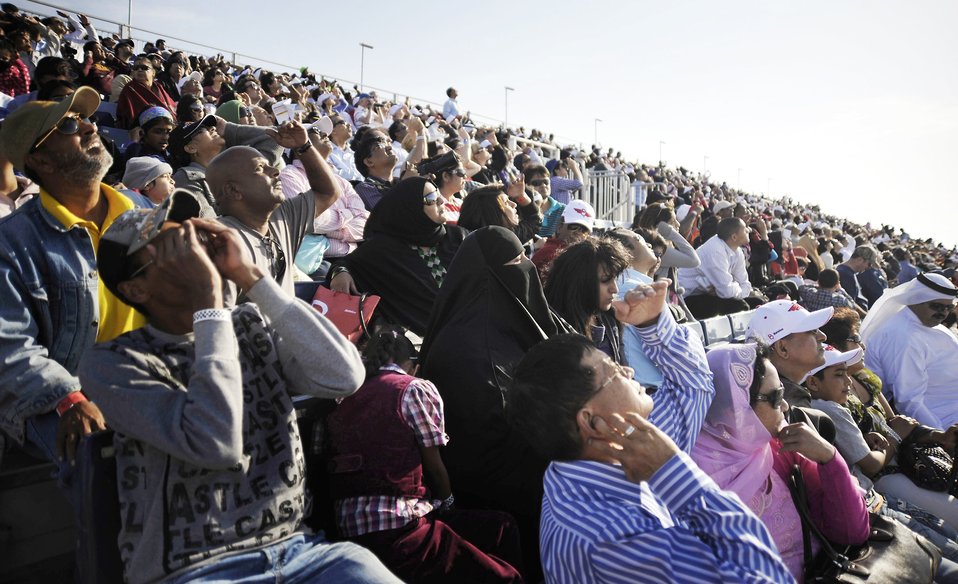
Airmen, Sailors demonstrate airpower at Bahrain International Airshow

Airshow spectators watch as a Navy F-18 Super Hornet flies overhead during Bahrain's inaugural airshow Jan. 23, 2010 at Manama, Bahrain.